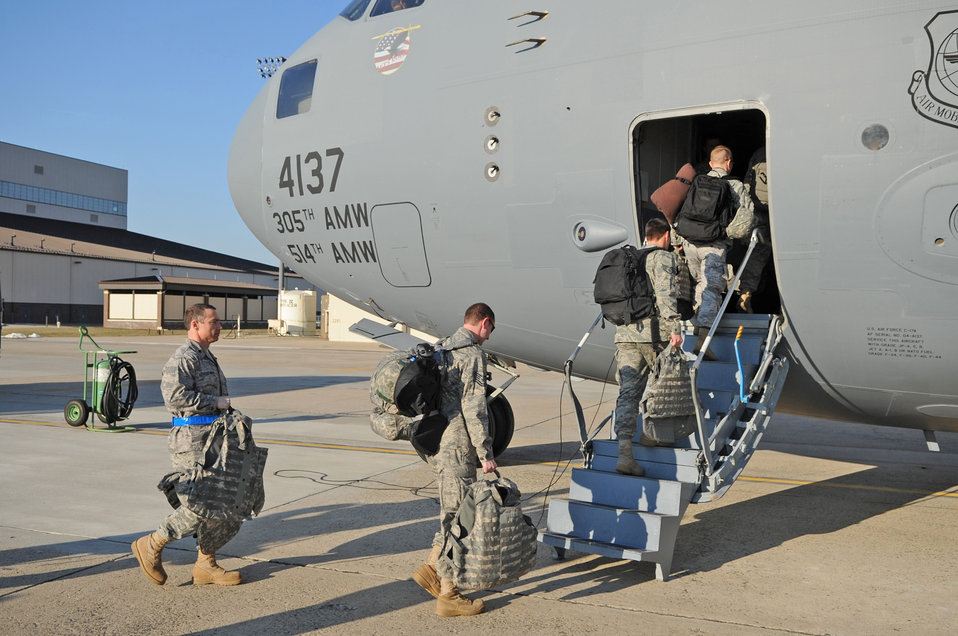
JB McGuire Airmen provide earthquake relief

Airmen assigned to the 621st Contingency Response Wing, 514 Air Mobility Wing, and 305th Air Mobility Wing at Joint Base McGuire-Dix-Lakehurst boarded a C-17 Globemaster III Jan. 14, 2010, in support of Haiti humanitarian relief operations.